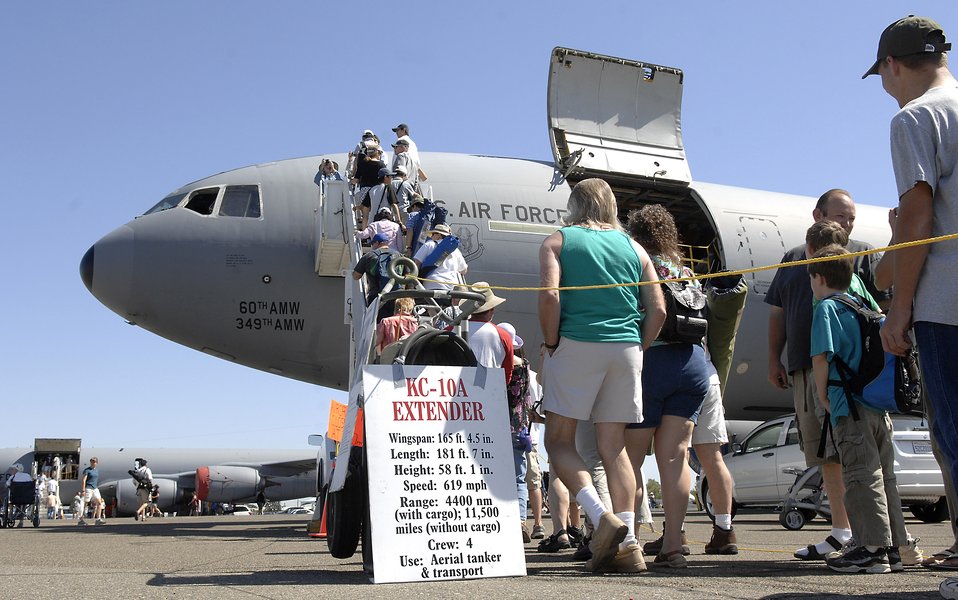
California Air Force Week

People line up to see the inside of a KC-10 Extender at the California Capital Air Show in Sacramento, Calif., June 9. The air show was the last event of Air Force Week California. The purpose of Air Force Week is to inform and educate the American public about the importance and roles of the Air Force in America's national defense. More than 50,000 people attended the air show featuring the Air Force Thunderbirds and numerous Air Force aircraft.